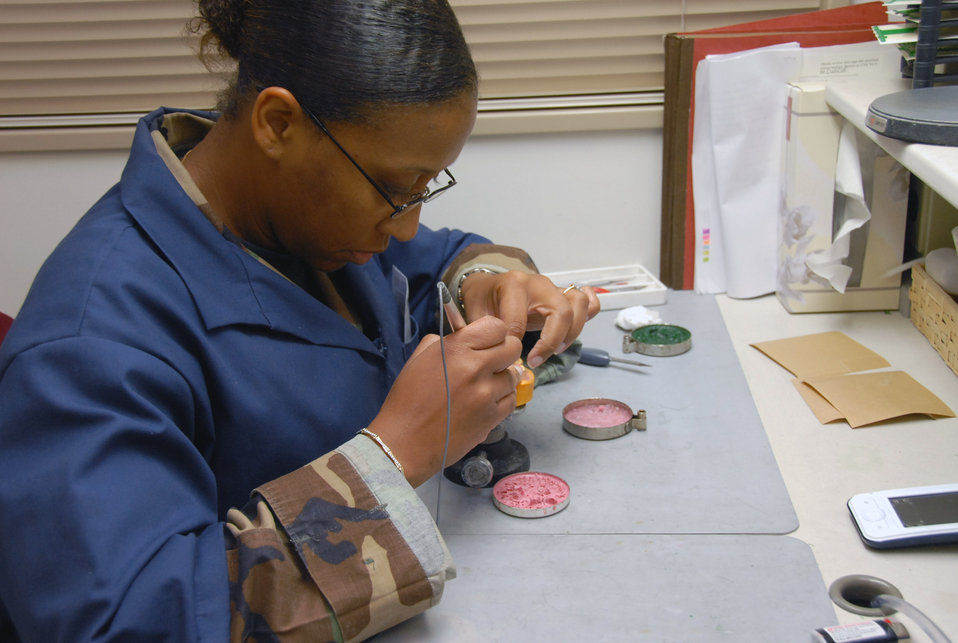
Kadena's labs sculpt bright smiles

Tech. Sgt. Kesha Williams, a dental lab technician with the 18th Dental Squadron's area dental lab, prepares a wax applicator for a metal framework Aug. 19 at Kadena Air Base, Japan.